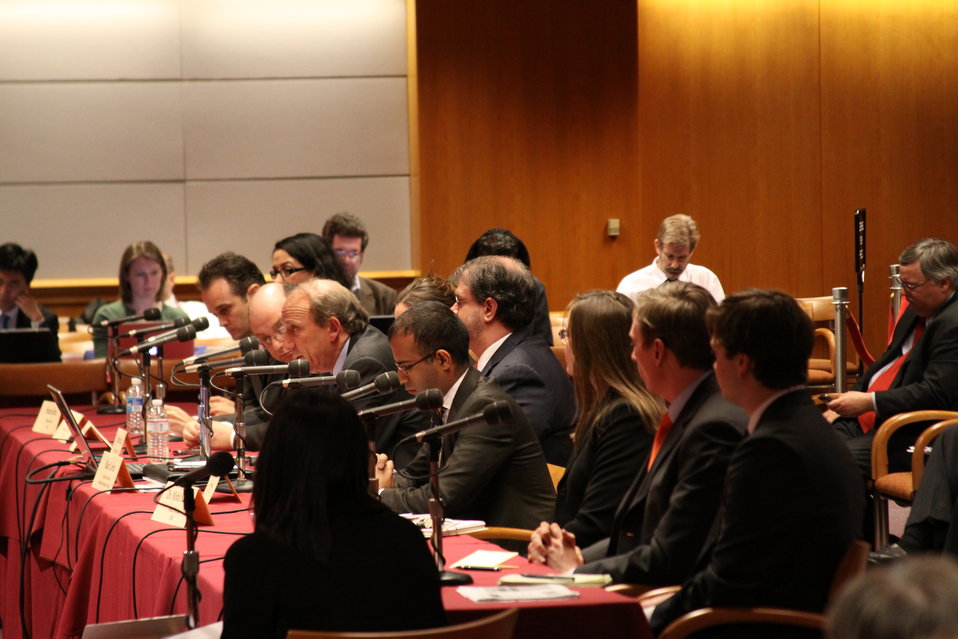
Open Commission Meeting - 2/18/2010

The Federal Communications Commission will hold an Open Meeting in Washington, DC. on February 18, 2010, which will include the following items:

E-Rate: An Order and Notice of Proposed Rulemaking to enable schools that receive funding from the E-Rate program to allow members of the general public to use the schools' Internet access during non-operating hours at no additional cost to the Universal Service Fund. This order and notice do not permit or require any changes to E-Rate applications due on February 11, 2010; Ex Parte Reform: A Notice of Proposed Rulemaking to improve the transparency and effectiveness of the FCC's decision-making process by reforming the ex parte rules; Procedural Reform: A Notice of Proposed Rulemaking to enhance the efficiency, openness, and transparency of the Commission's proceedings by improving and modernizing certain organizational and procedural rules; National Broadband Plan Status Report: Commission staff will report on the status of the National Broadband Plan, providing a framework for the national purposes portion of the Plan.